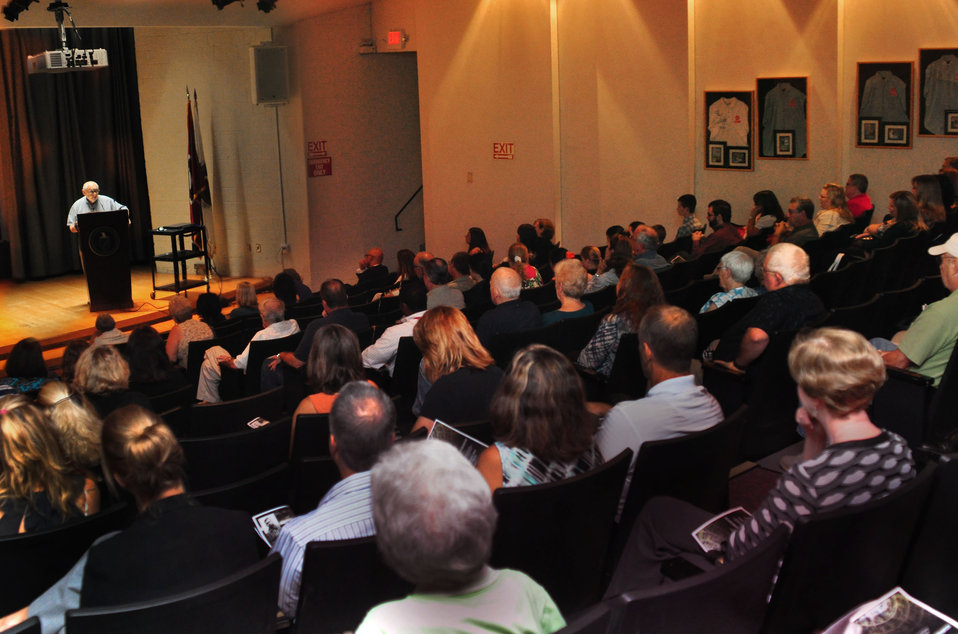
Holocaust Remembrance Program FEW Arthur Pais at AMSE in Oak Ridge

13-096 DOE photo Lynn Freeny 8-8-2013 Oak Ridge Tennessee